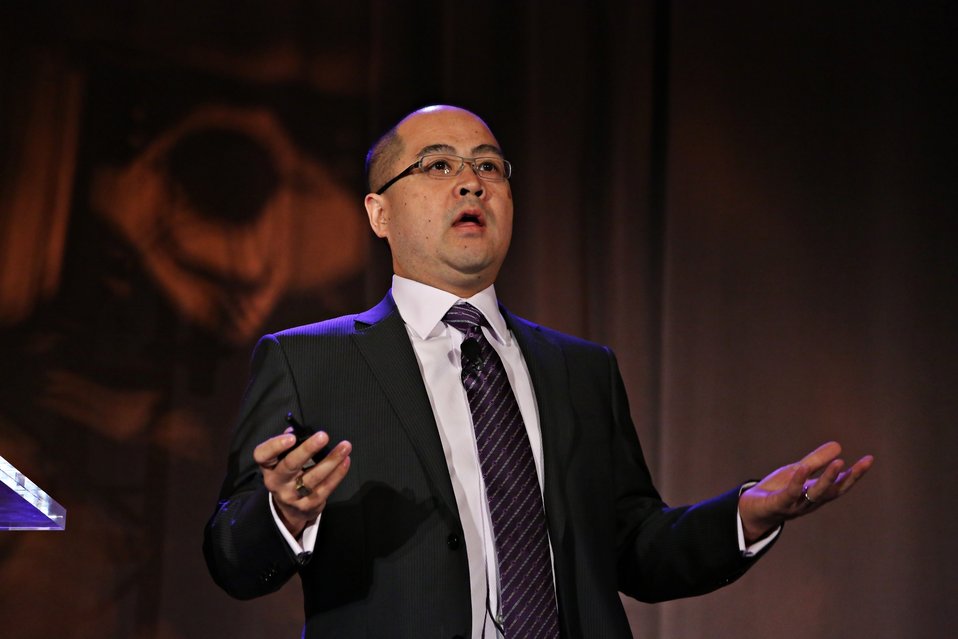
Day 2 Keynote Session 22

SunShot Director Minh Le providing a SunShot Portfolio Overview.